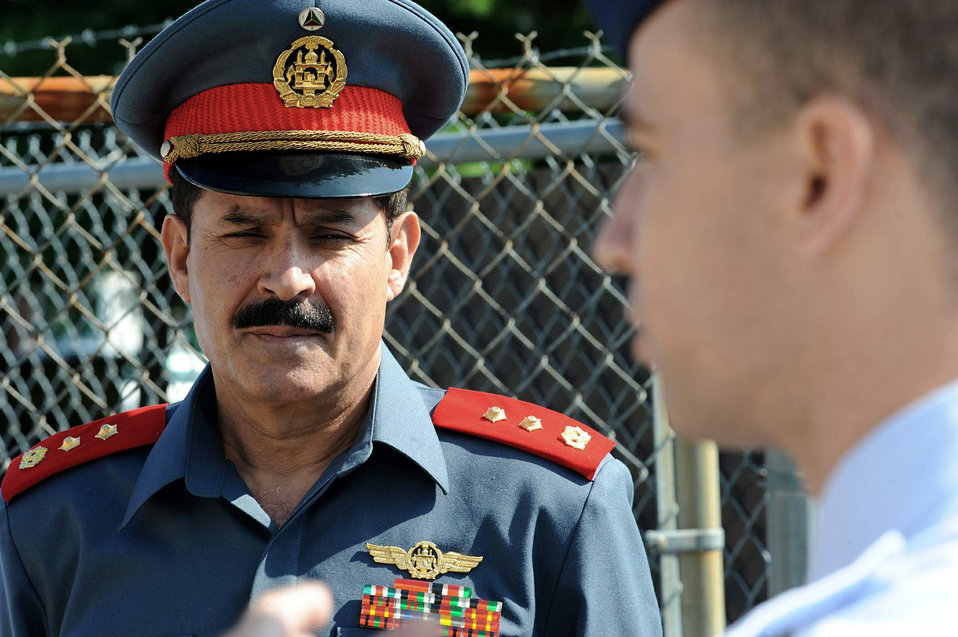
Afghan air corps commander calls Expeditionary Center a 'role model' for training

Afghan Maj. Gen. Mohammad Dawran listens as Master Sgt. Charles Sherman explains the Mobile Command and Control system July 13 at the Air Force Expeditionary Center on Joint Base McGuire-Dix-Lakehurst, N.J. General Dawran, commander of the Afghanistan National Army Air Corps, visited the installation to learn more about the Air Education and Training Command's Air Adviser Course housed at the Expeditionary Center on Fort Dix. Sergeant Sherman is the Mobility Air Forces Mobile Command and Control Leadership Course director.